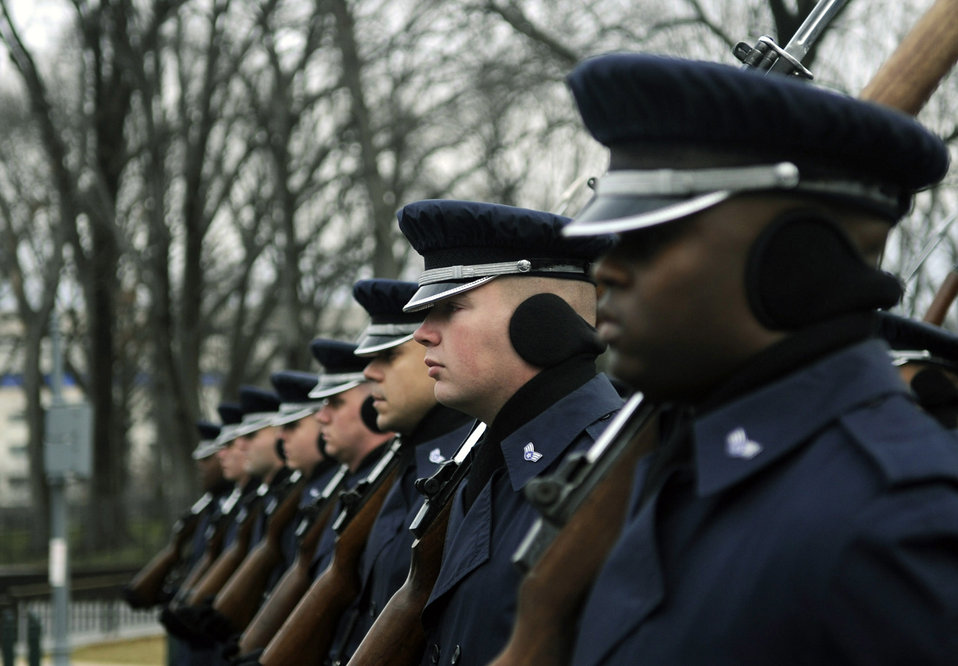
The long blue line

The U.S. Air Force Honor Guard rehearses Jan. 11 in preparation for 56th presidential inauguration in Washington, D.C. More than 5,000 men and women in uniform are providing military ceremonial support to the presidential inauguration.